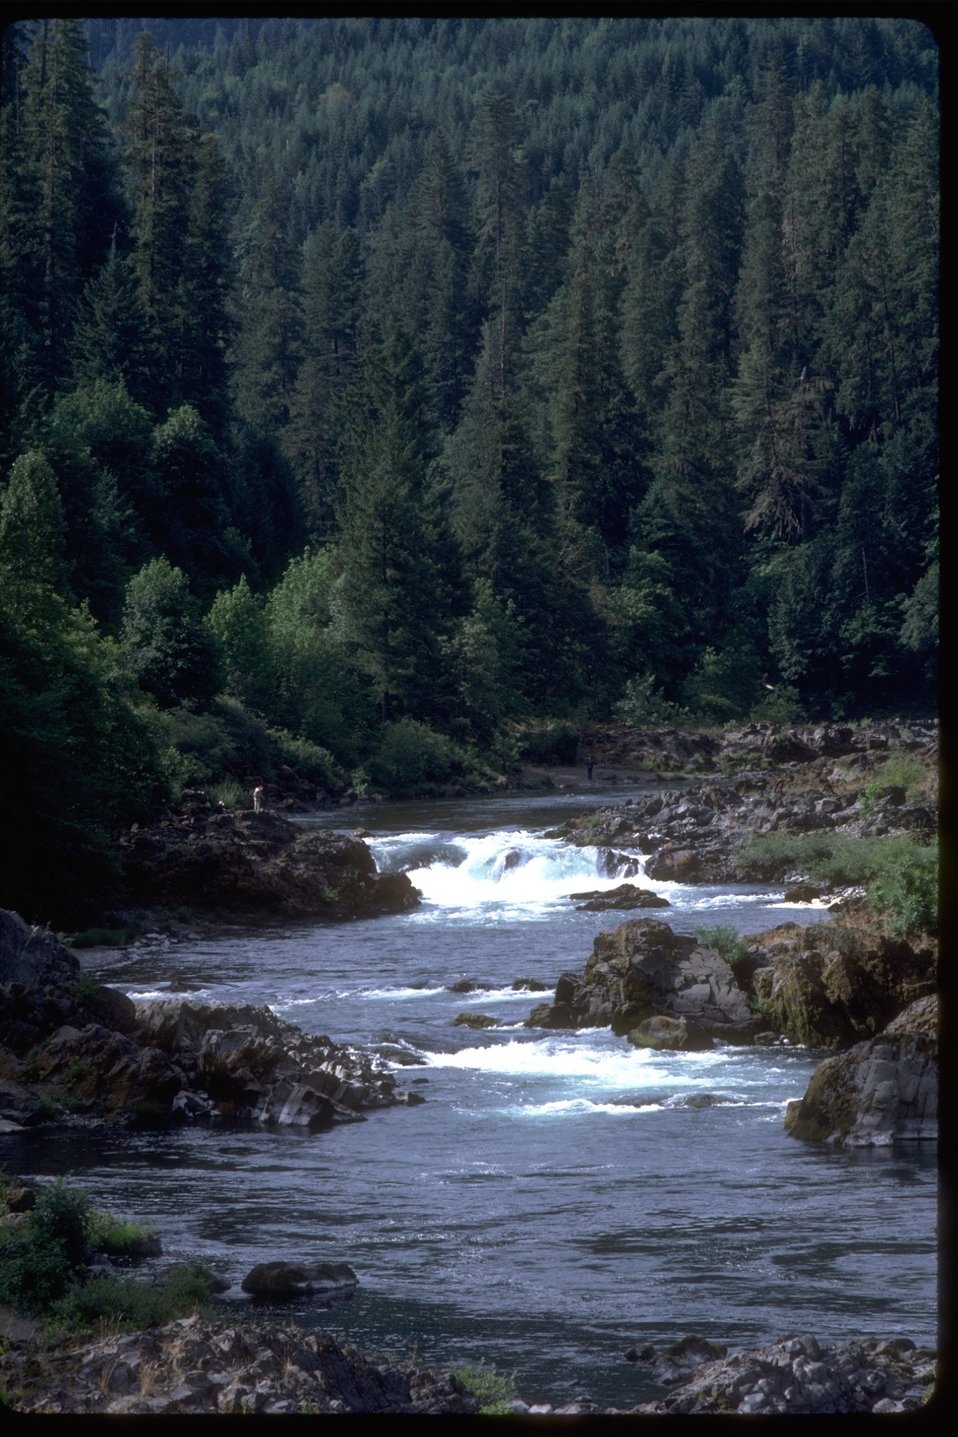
North Umpqua River.